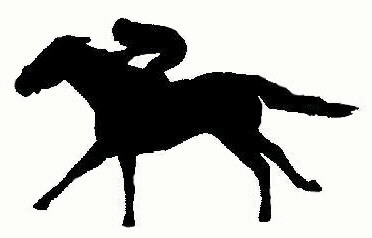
Sketch